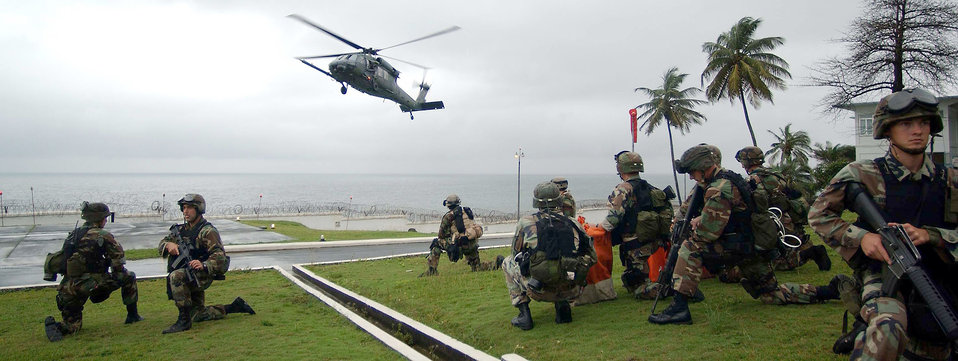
Safe landing zone

LUNGI, Sierra Leone -- Marines with the Fleet Anti-terrorism Security Team based out of U.S. Naval Air Station Rota, Spain, provide security for a HH-60G Pave Hawk from the 56th Rescue Squadron, Naval Air Station Keflavik, Iceland. The helicopter landed at the U.S. Embassy in Liberia, July 28, 2003. The 398th Air Expeditionary Group is currently in Sierra Leone to provide personnel recovery and emergency evacuation capability for the Humanitarian Assistance Survey Team in Liberia.